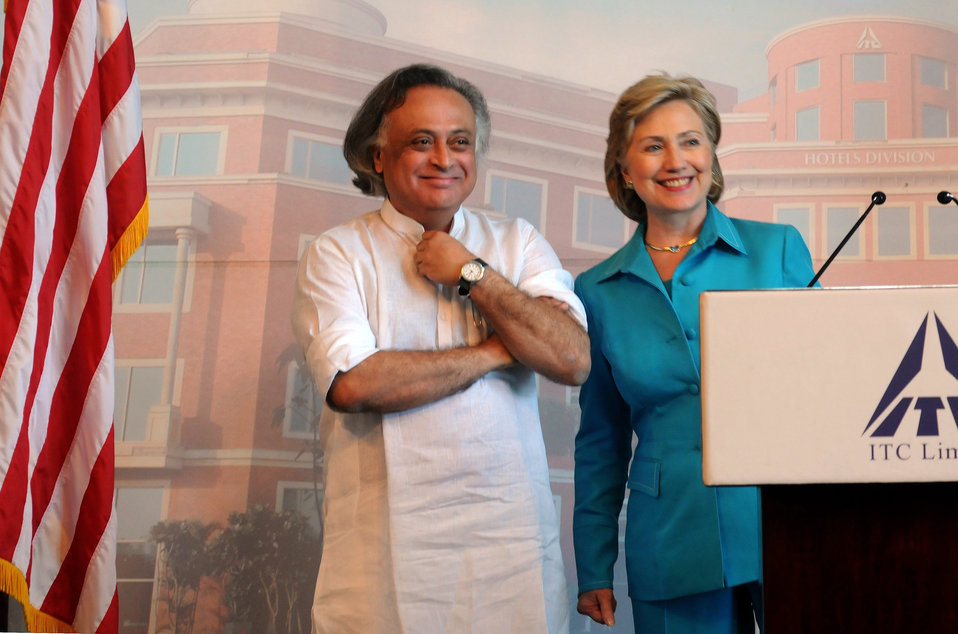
Secretary Clinton Visits ITC Green Center

U.S. Secretary of State Hillary Rodham Clinton at the ITC Green Centre in Gurgaon, outside of New Delhi. The ITC Green Centre is the world's largest 'Platinum Rated' green office building.